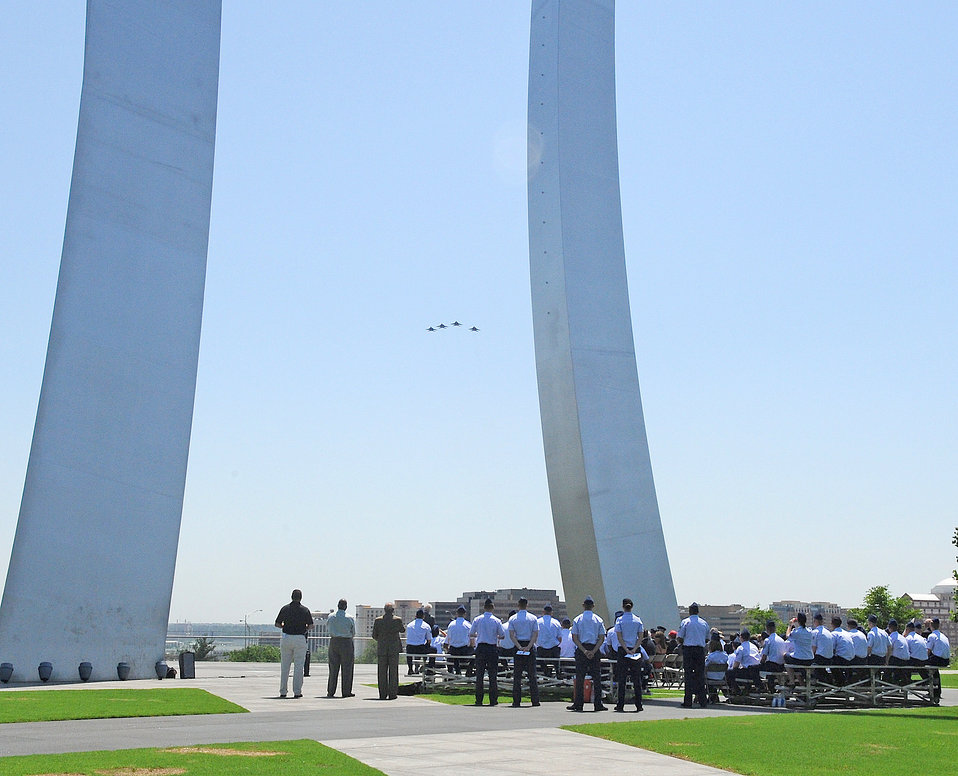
Doolittle Award

Four F-15E Strike Eagles fly June 2, 2011, above the Air Force Memorial in Arlington, Va., following the 4th Fighter Wing's acceptance of the inaugural Doolittle Award. The Air Force Historical Foundation's new distinction acknowledges sustained, distinctive contributions to the history and heritage of the U.S. Air Force, and is named after aviation pioneer James H. Doolittle, who served as a lieutenant general in the United States Army Air Forces during World War II and received the Medal of Honor for valor and leadership as commander of the famous Doolittle Raid.